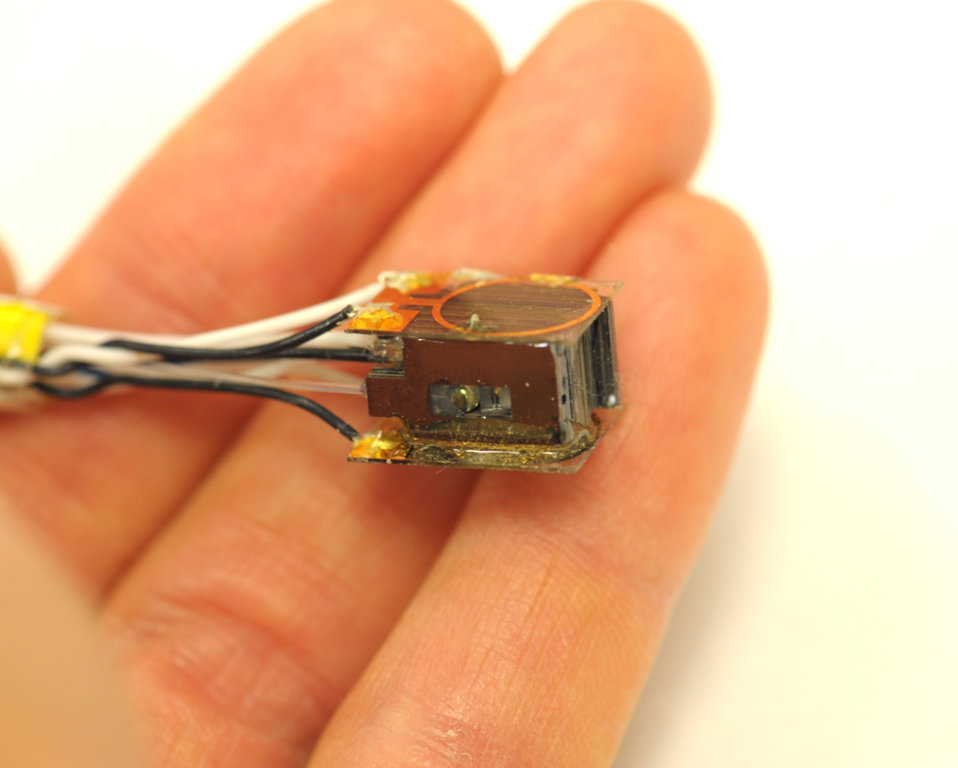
Brain Sensor

NIST's atom-based magnetic sensor, about the size of a sugar cube, can measure human brain activity. Inside the sensor head is a container of 100 billion rubidium atoms (not seen), packaged with micro-optics (a prism and a lens are visible in the center cutout). The light from a low-power infrared laser interacts with the atoms and is transmitted through the grey fiber-optic cable to register the magnetic field strength. The black and white wires are electrical connections.